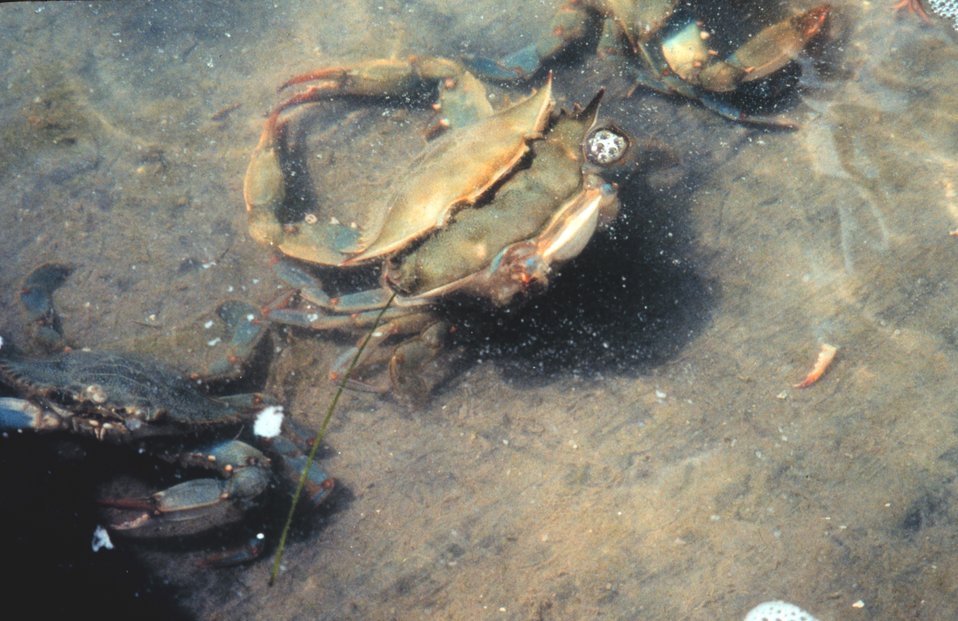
Photo #4 of 8. Having reached the 'buster' molt stage, a Maryland blue crab , Callinectes sapidus, sheds its shell. The genus and species mean tasty beautiful swimmer.